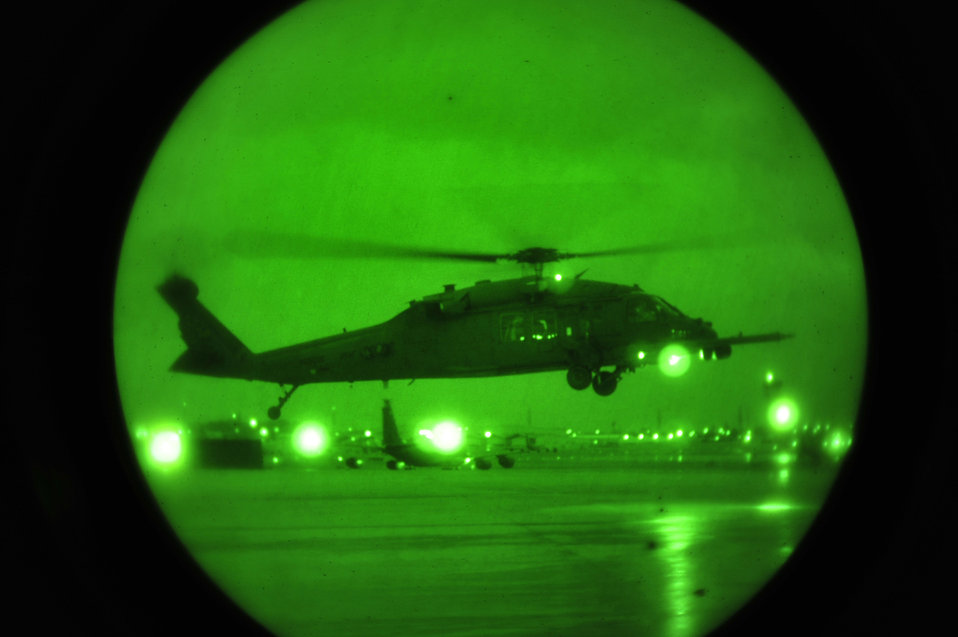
Airmen to the rescue

An HH-60 Pave Hawk, carrying members of the 33rd Rescue Squadron, takes off March 13, 2011, from Kadena Air Base, Japan, to assist in search and rescue on mainland Japan in support of disaster relief efforts resulting from the earthquake and subsequent tsunami that struck March 11.